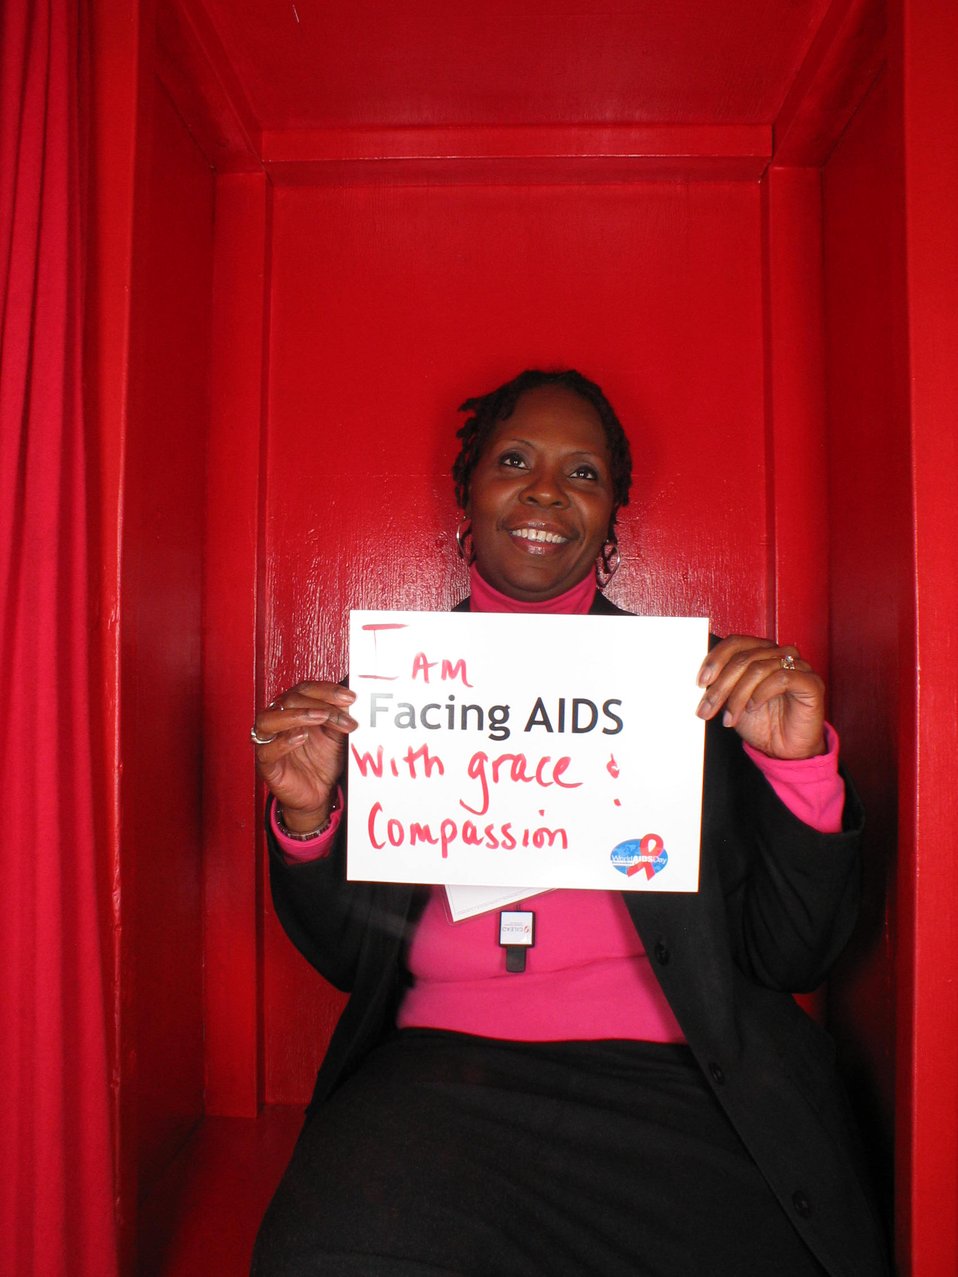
I am Facing AIDS with grace and compassion.